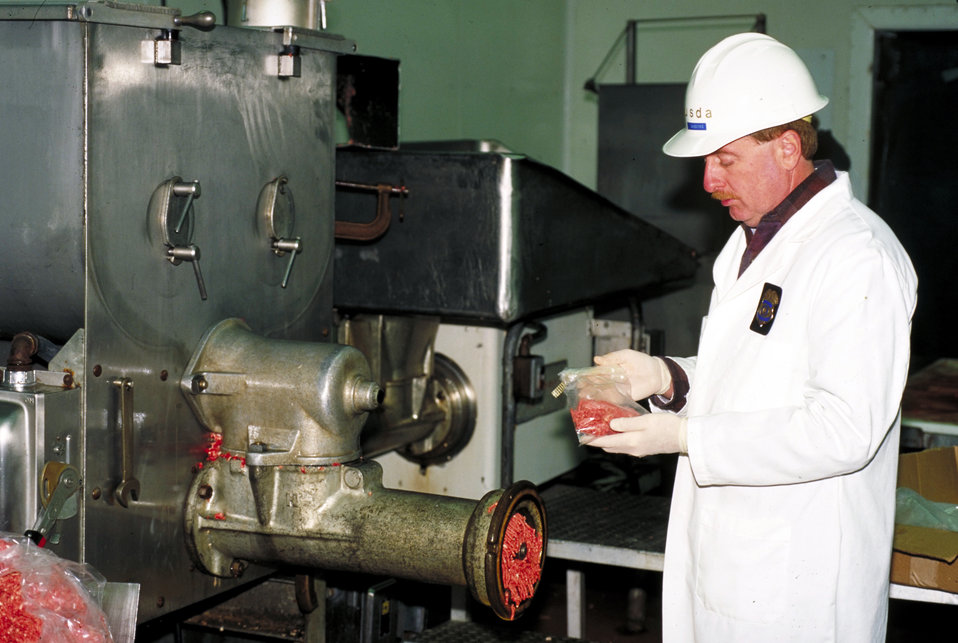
U.S. Department of Agriculture (USDA) Food Safety Inspection Service (FSIS) inspector collects ground beer samples for microbiological testing to verify the adequacy of the Hazard Analysis and Critical Control Points (HACCP) issued by FSIS on June 15, 1995. USDA photo Lester Shepherd.